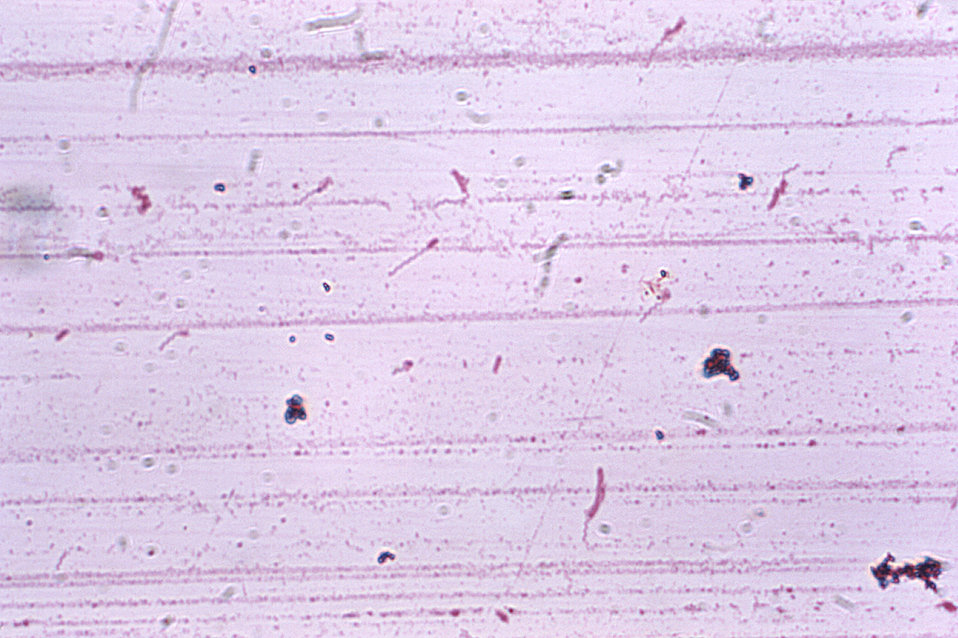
Magnified 1000X, this Liefson's flagella stained photomicrograph revealed the presence of a number of flagellated Brevundimonas diminuta, formerly known as Pseudomonas diminuta.